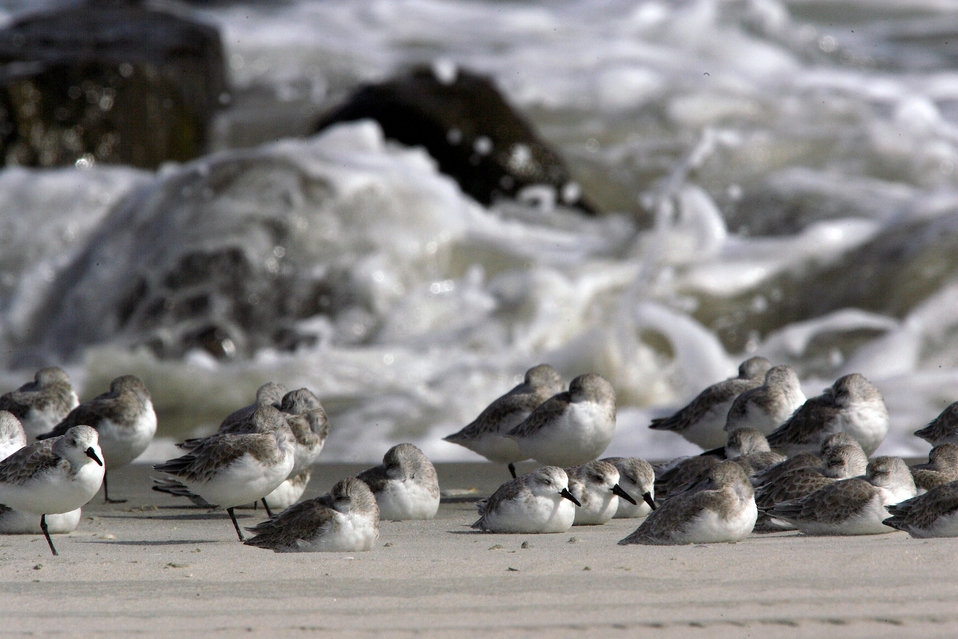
Photo of the Week - Sanderlings at Stone Harbor, NJ

Photo of the week - 1/5/10

Sanderlings at Stone Harbor, New Jersey.